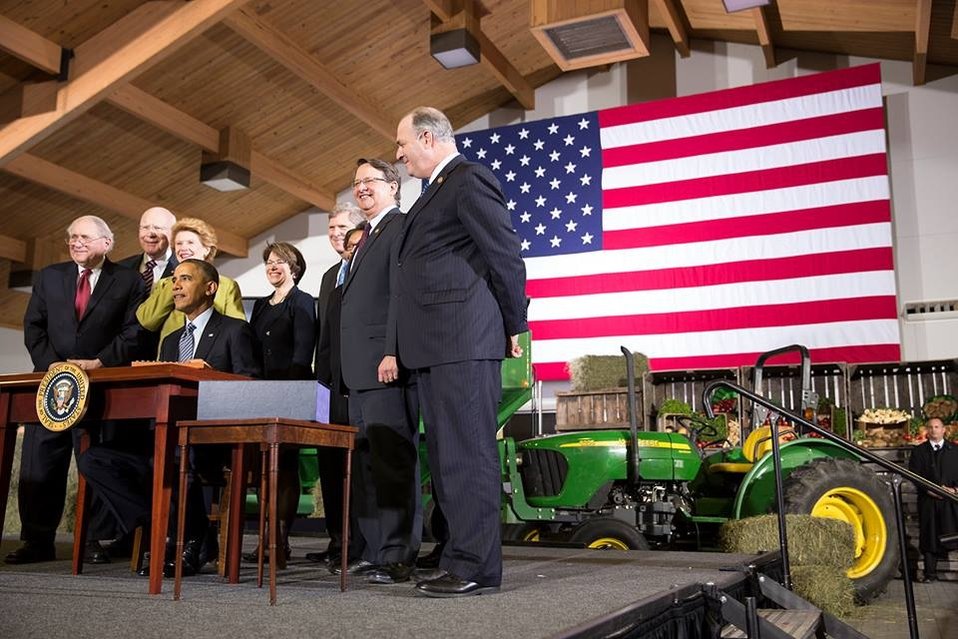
President Barack Obama signs the Agricultural Act of 2014 at Michigan State University in East Lansing, MI on Friday, Feb. 7, 2014. The President spoke on the importance of the act to America’s economy, detailing the progress over the last five years and how this bill will build on that progress. (L to R Senator Carl Levin (MI), Senator Patrick J. Leahy (VT), Senator Debbie Stabenow (MI), President Barack Obama, Senator Amy Klobucher (MN), Agriculture Secretary Tom Vilsack, Congresswoman Marcia L. Fudge (OH), Congressman Gary Peters (MI), and Daniel Kildee (MI)).